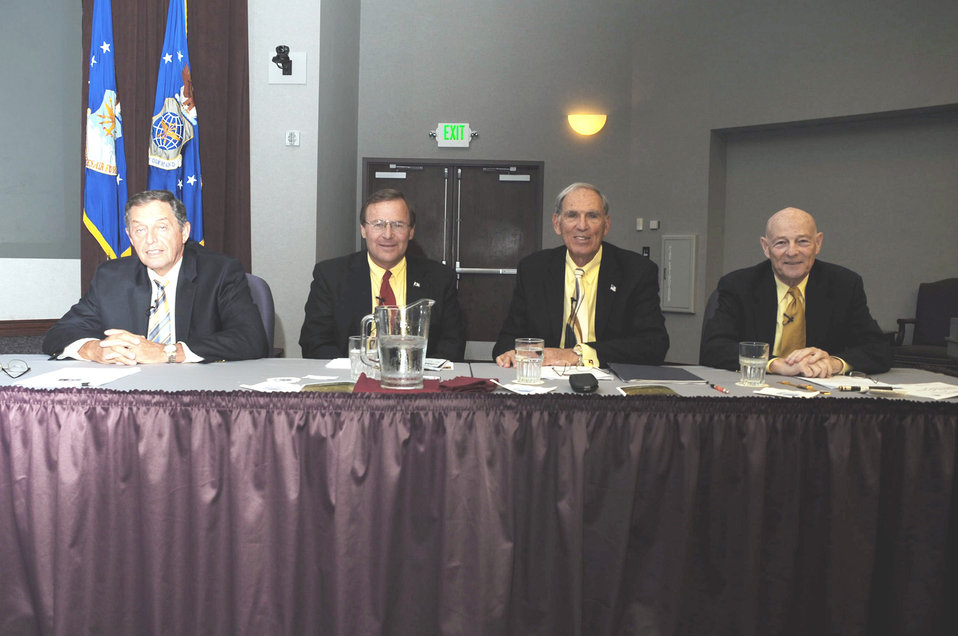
Tanker Living Legends Speaker Series - Operation Desert Shield/Desert Storm

Air Mobility Command officials held another session of their Tanker Living Legends speaker series in the Global Reach Planning Center at Scott Air Force Base, Ill, on Aug. 28, 2009. Among those participating in the panel were (from left) retired Col. Dennis D. Carpenter, retired Lt. Col. Scott Hente, retired Lt. Gen. Pat Caruana and retired Brig. Gen. Kenneth F. Keller. All four retired officers were on hand to recall their experiences in coordinating air refueling efforts for operations Desert Shield and Desert Storm in 1990-91.